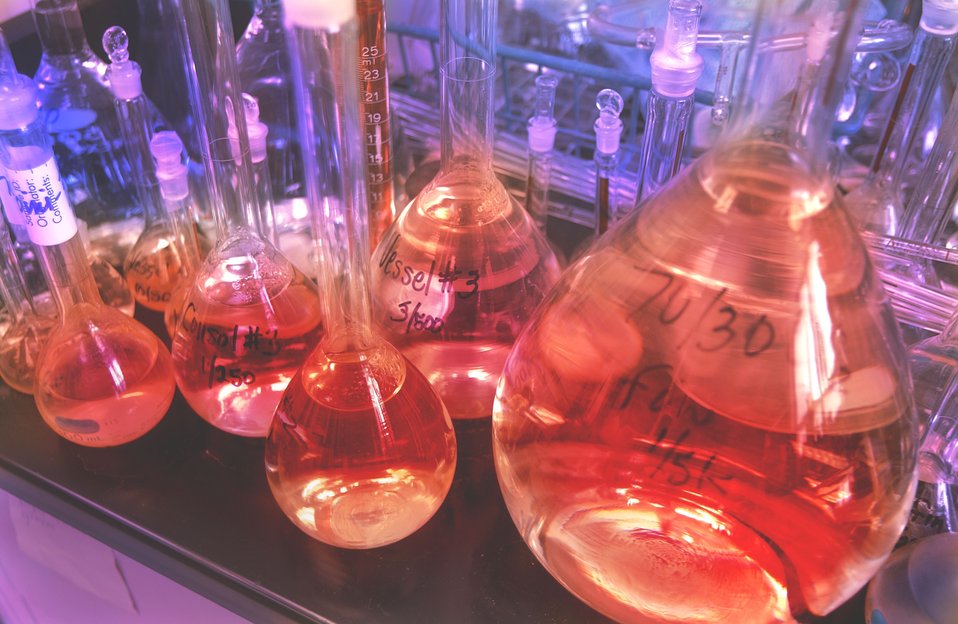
Laboratory flasks filled with miscellaneous chemicals.